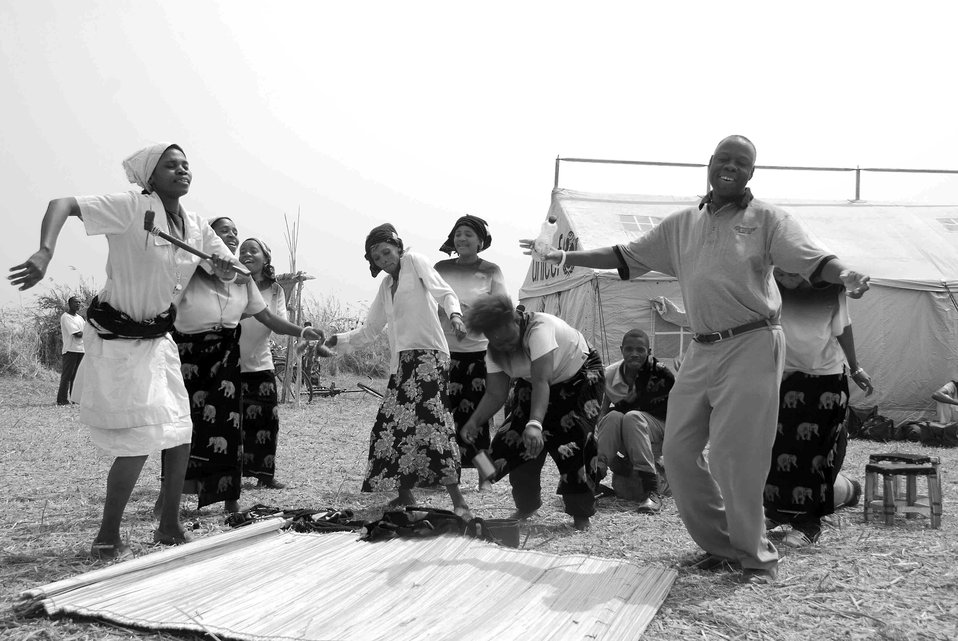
A U.S. Embassy Lusaka Staffer Dances

A U.S. Embassy Lusaka in Zambia staffer dances at a program for HIV/AIDS education held for nomadic fisher-families on Zambia's Western Province flood plain in November 2007.